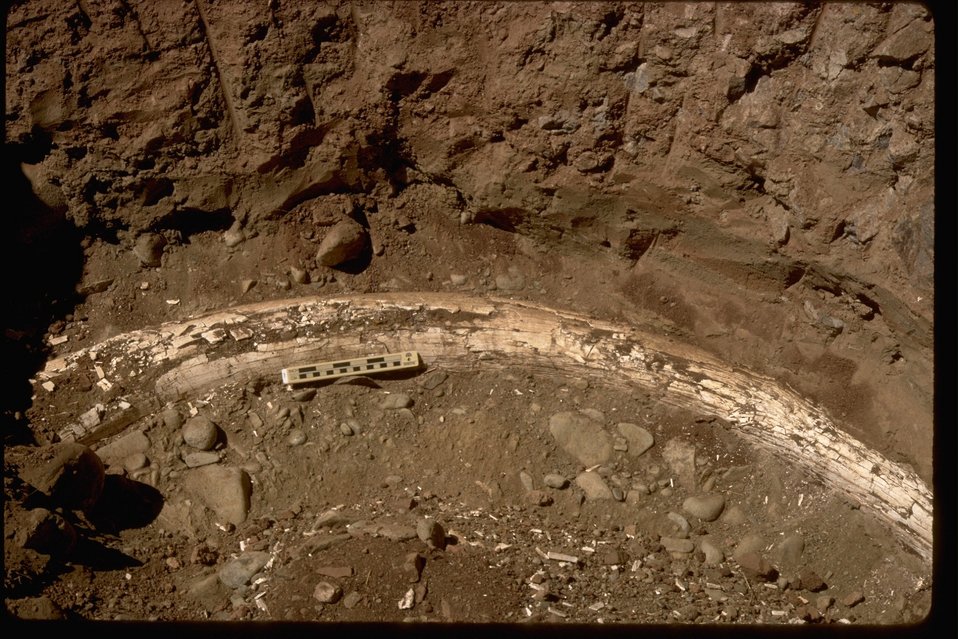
Mammoth Tusk found along Bridge Creek.